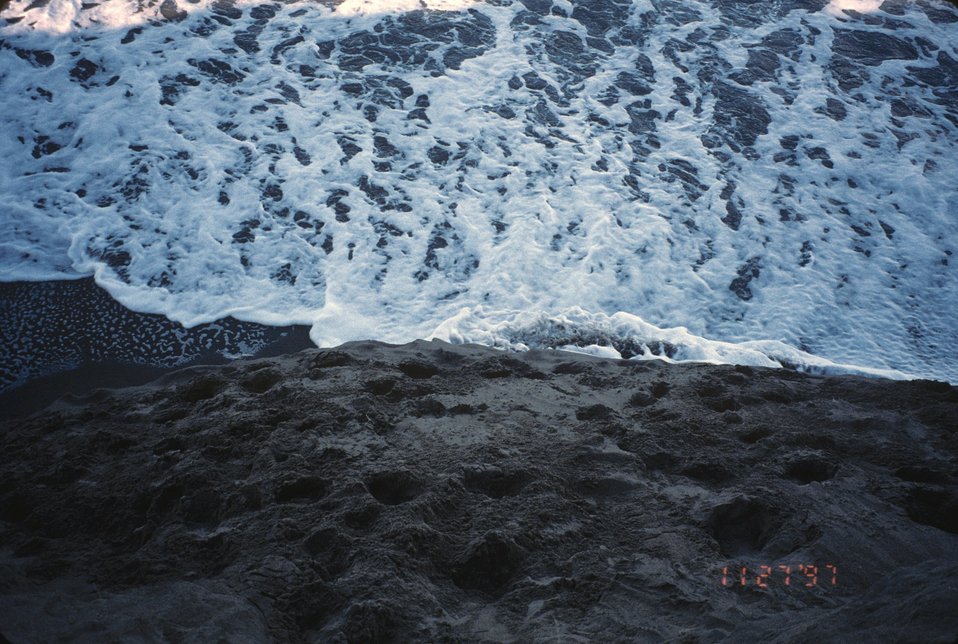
Dillon Beach